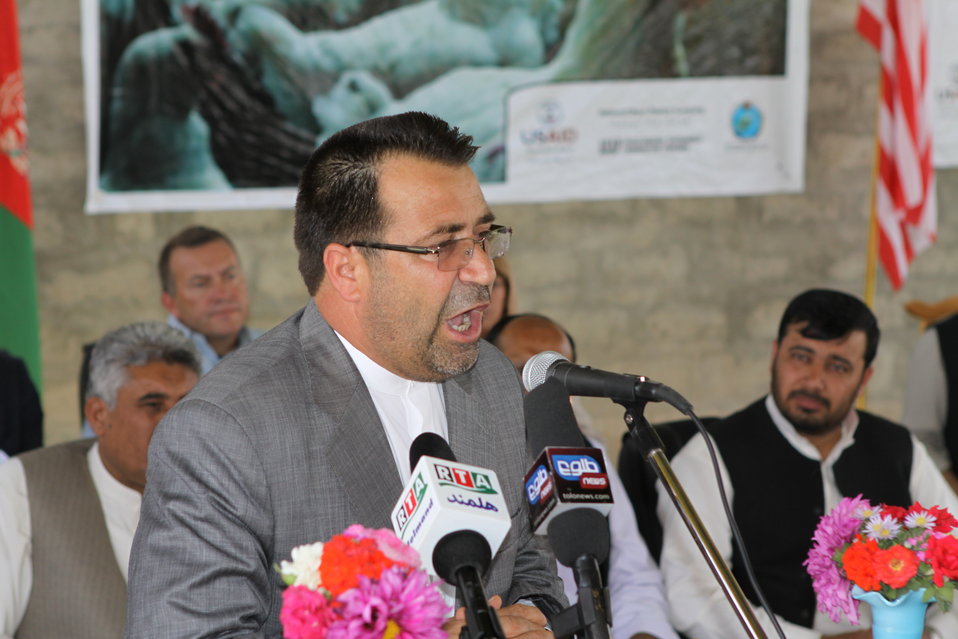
Bolan Poultry Farm